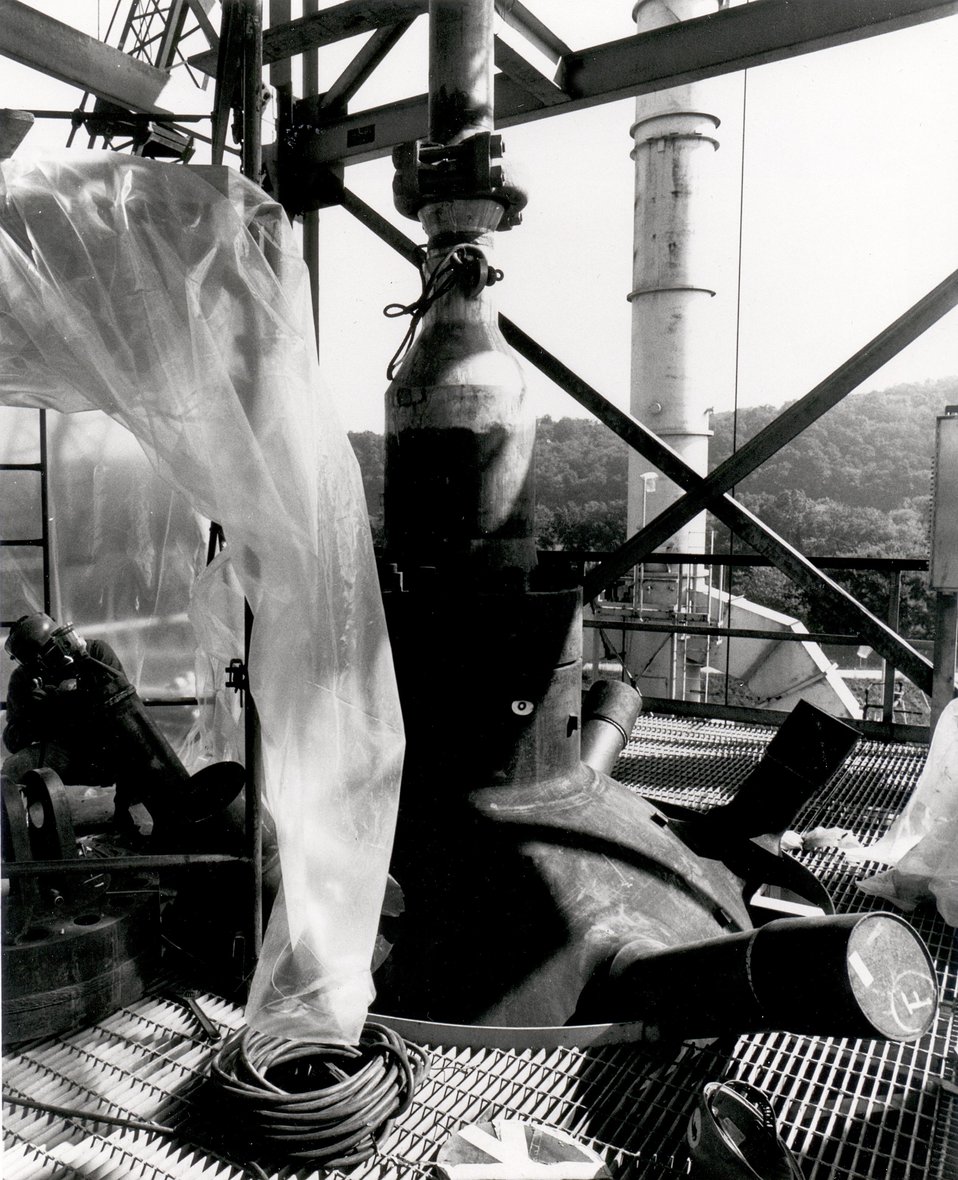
H-Coal Reactor. Circa 1979.